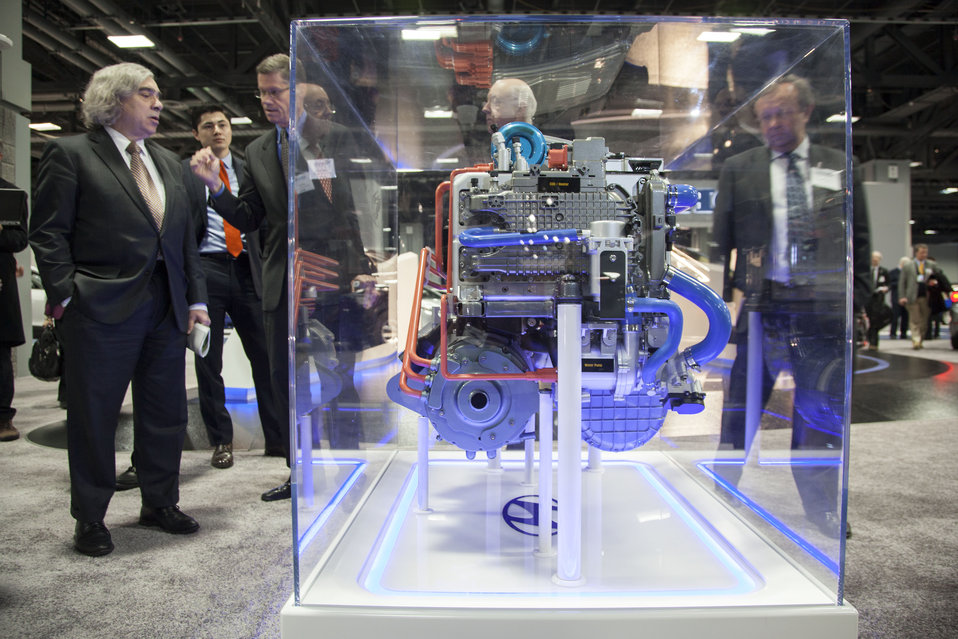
Pictured here is Secretary Moniz looking at the fuel cell and motor used to power Hyundai’s Tucson fuel cell vehicle. Fuel cell vehicles use hydrogen to produce electricity, which powers an electric motor to make the vehicle and its accessories work.